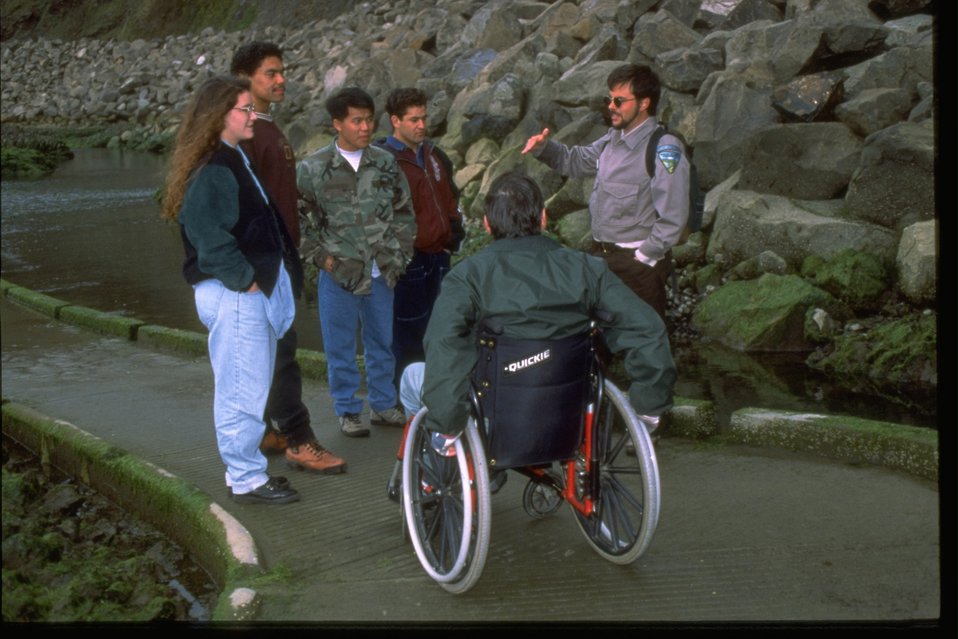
BLM employees and visitors at the Quarry Cove tidepools in the Yaquina Head ONA.